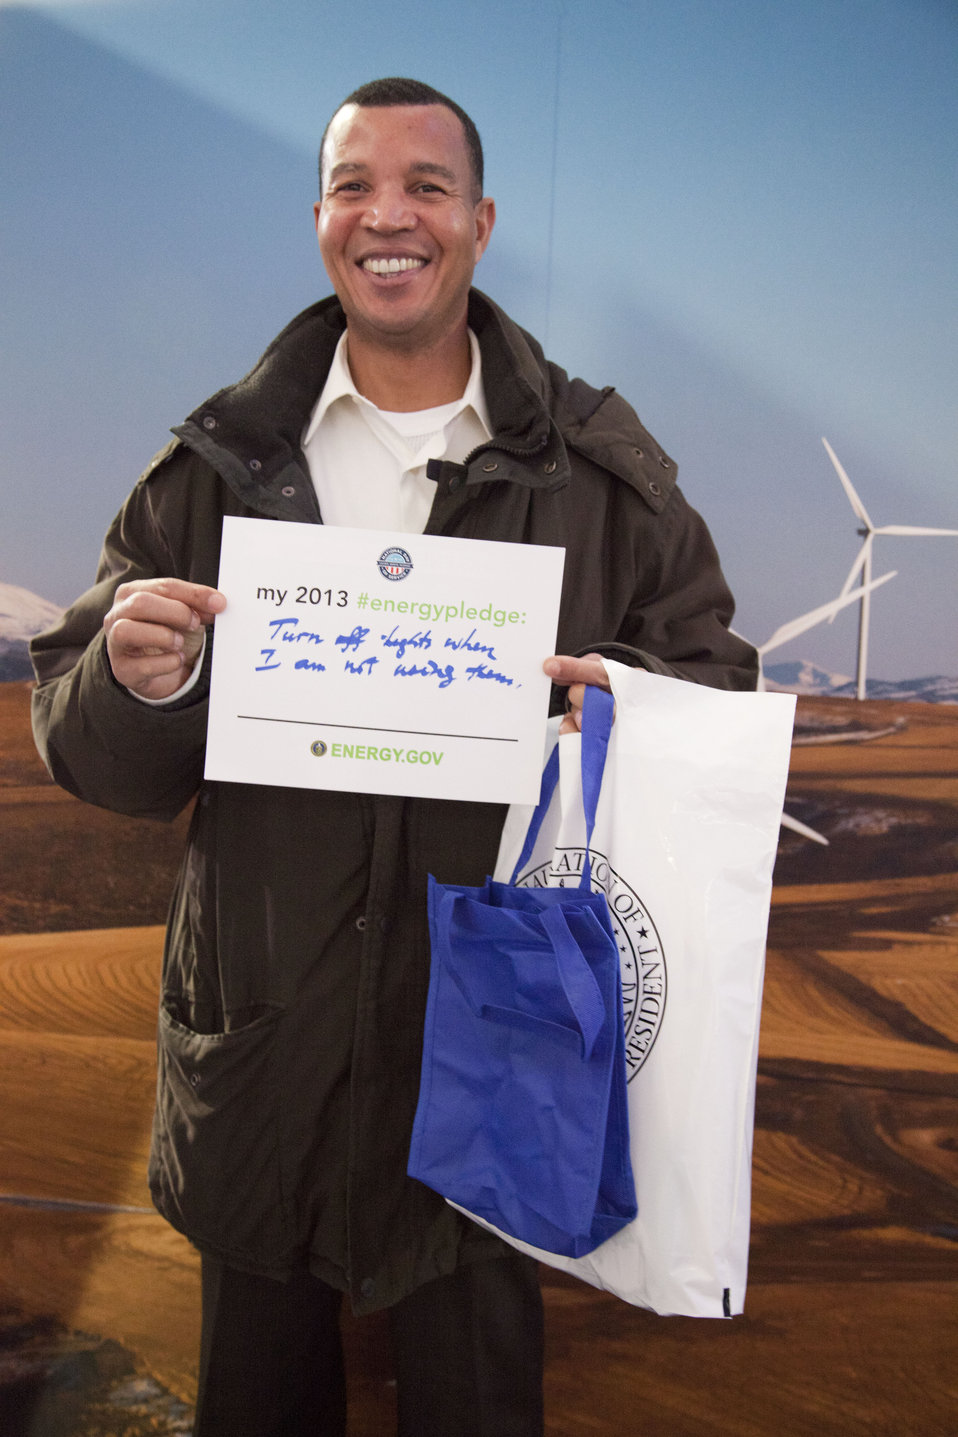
What's your #energypledge?